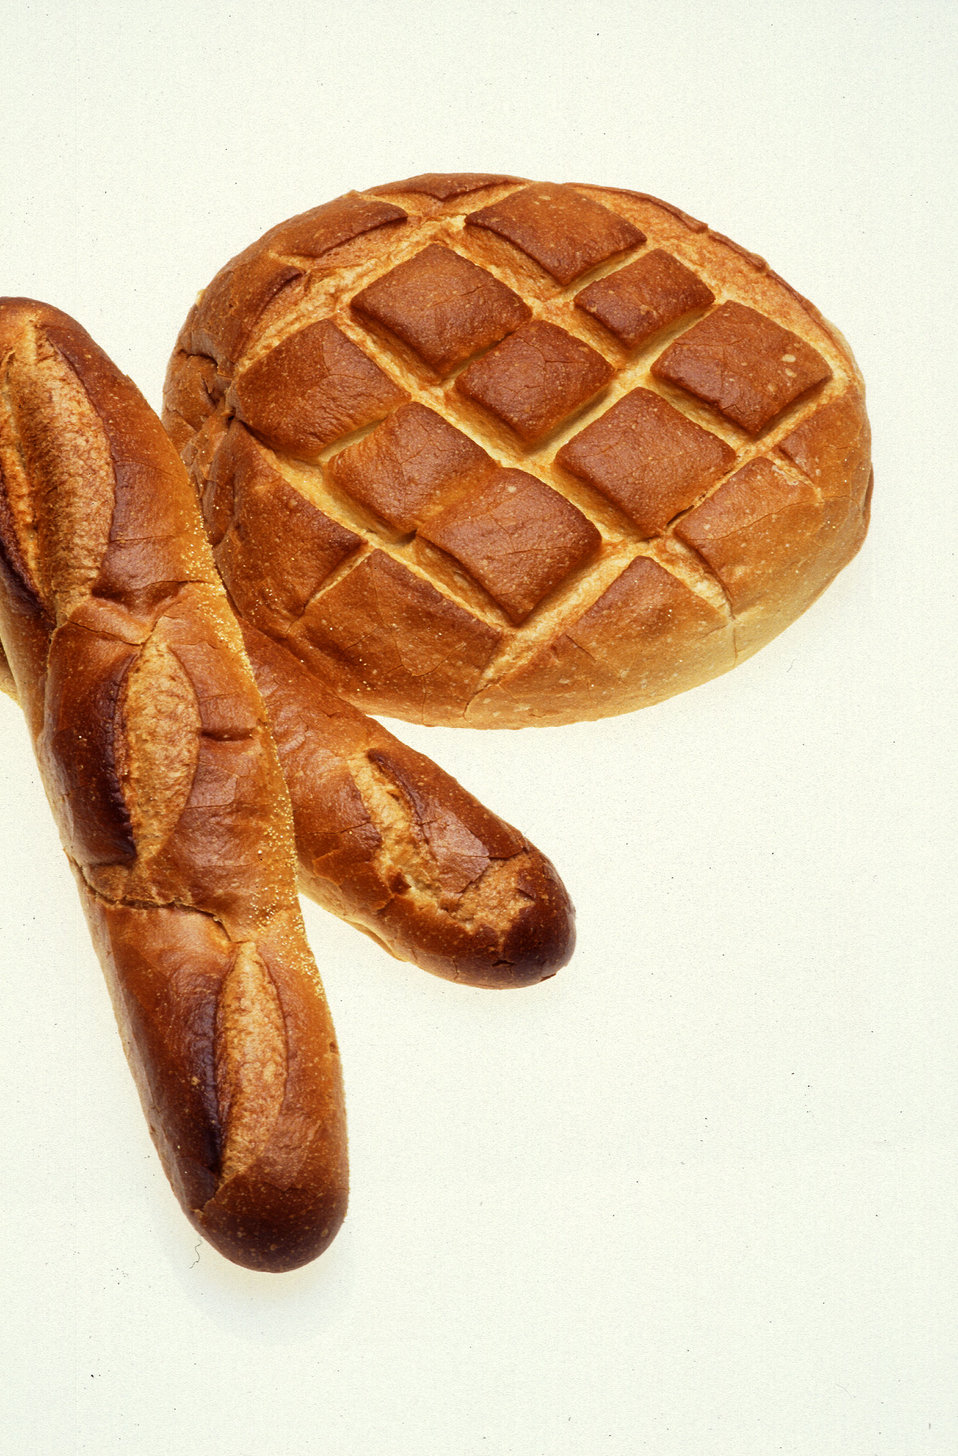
Bakers in the San Francisco Bay Area insisted their sourdough bread couldn't be duplicated farther than 50 miles from the center of San Francisco. Didn't know why, either. It just couldn't. U.S. Department of Agriculture (USDA) Agriculture Research Service (ARS) researchers, who knew there was a scientific answer to the mystery of sourdough bread. One puzzling thing about the bread was its high acetic acid content, which contributed to its tangy taste. Yeasts generally can't tolerate acetic acid. Obtaining samples of starter dough from five local bakeries, a USDA ARS scientist found in all five a bacterium never before discovered. Naming it Lactobacillus sanfrancisco, he spent several months and tried 30 different substances before finding a medium in which it would grow. The other thing he found was an unusually acid-tolerant yeast, Saccharomyces exiquus. It worked with the bacterium in a symbiotic relationship to produce the bread's unusual flavor, crust, and texture. The scientist stated, 'It was a happy marriage between two noncompetitive bugs.' So now San Francisco-style sourdough bread can be baked anywhere in the world. Which turned out not to be bad news for the City by the Bay. Pure cultures of L. sanfranciscoare now grown commercially and are commonly used by San Francisco bakers to control the quality of their product.